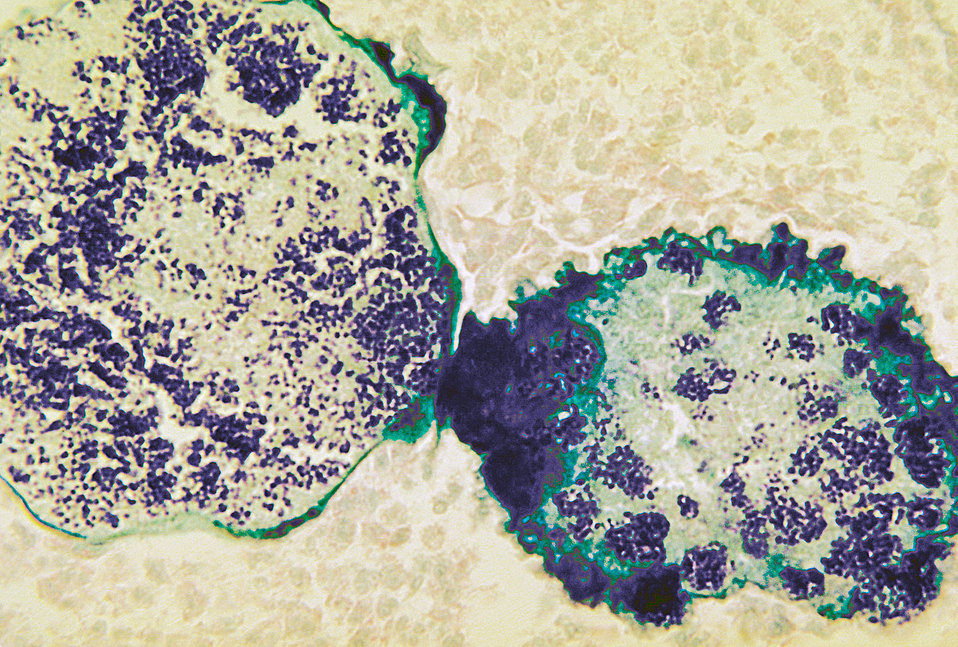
Histopathology of botryomycosis, foot. Methenamine silver stain.